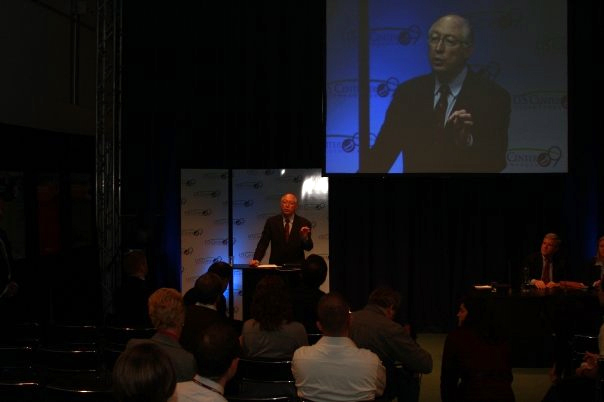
COP-15 Presentation

Presentation at the U.S. Center at COP15, Bella Center, Copenhagen, Denmark on December 11, 2009.